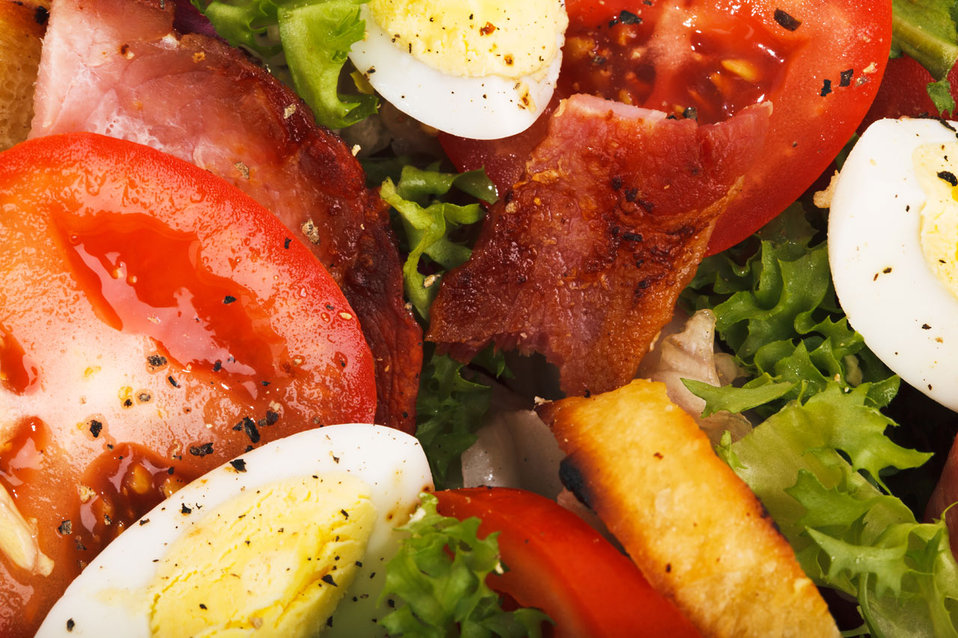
Tomato and bacon salad

Closeup of fresh composed salad.